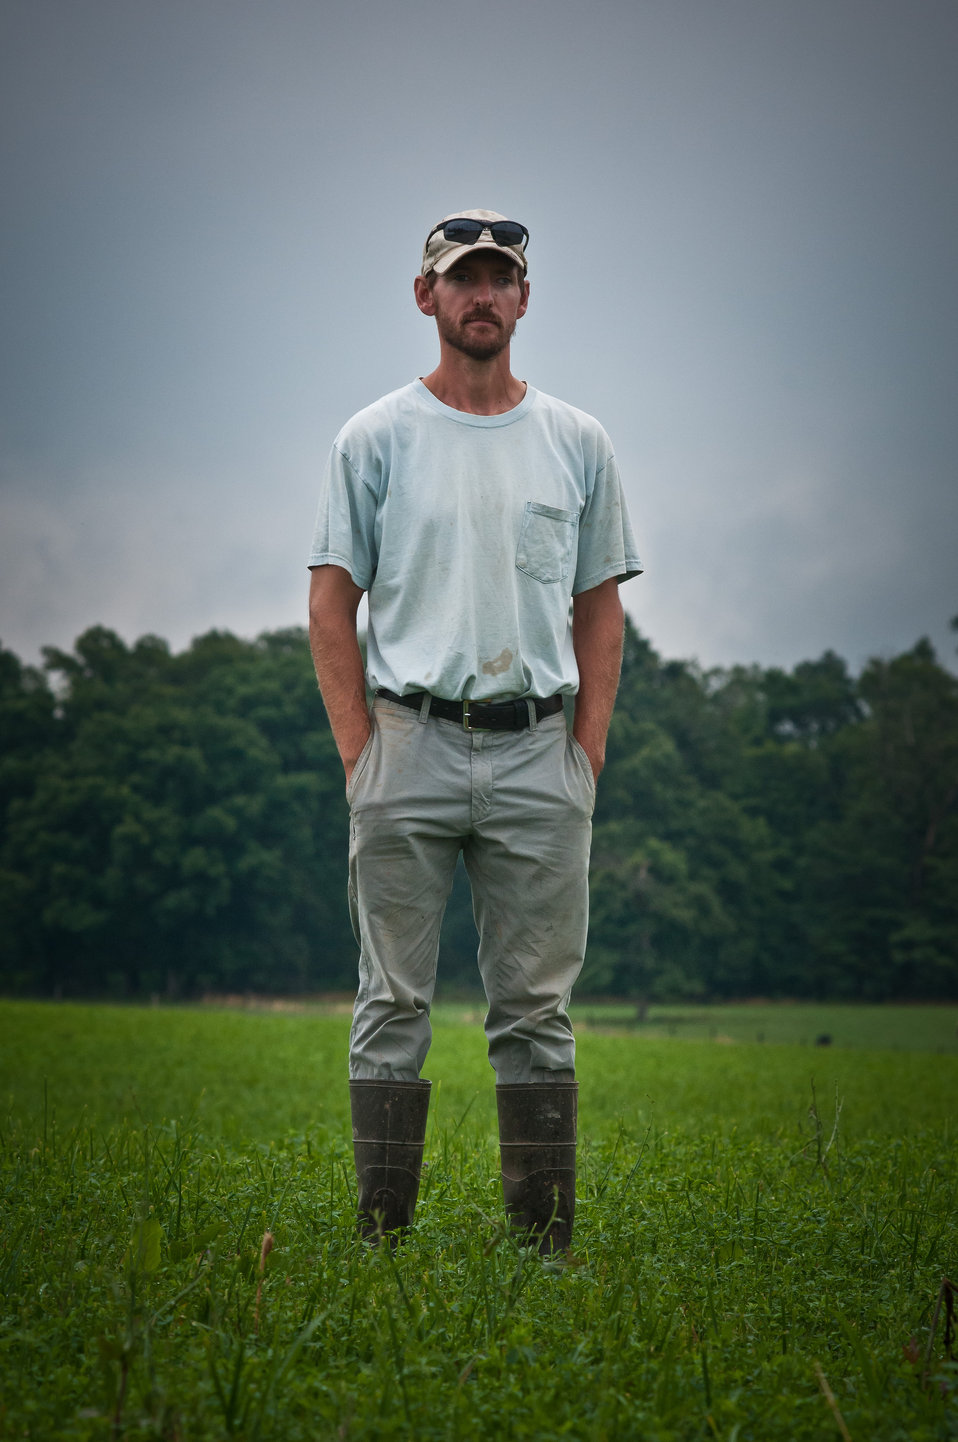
Farm assistant George Kloph at Nick’s Organic Farm, in Adamstown, MD, on Friday, July 12, 2013. The farm, owned by Nick Maravell, produces Black Angus beef, chicken, turkey, eggs, hay, soybeans, corn, alfalfa, orchard grass, rye; and other crops. The cattle are100% grass-fed receiving certified organic pasture, certified organic hay (in winter), water and mineral salts mixed with sea kelp. The cattle are not fed hormones, antibiotics or animal products. Poultry feed from grain is ground from organic grain. The poultry also graze on organic pastures. The farm has conducted on-farm research with federal, state and non-profit agencies to refine organic practices.